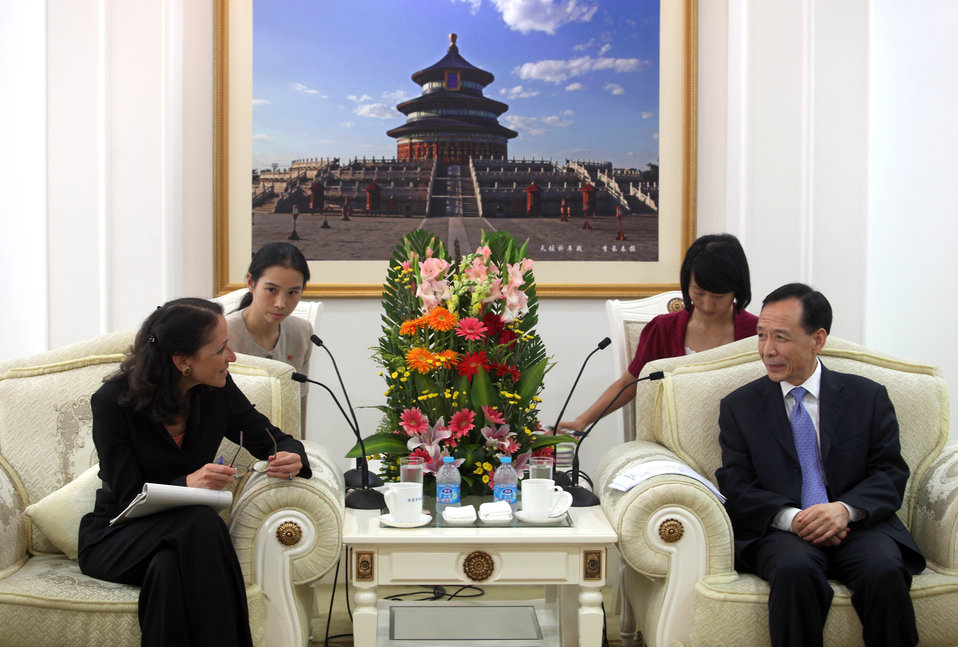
FDA’s China Offices Focus on Product Safety

Ensuring the safety of foreign imports is a top priority for FDA Commissioner Margaret Hamburg. In 2010, she and China’s Vice Minister Pu Changcheng reaffirmed their commitment to product safety. Read this FDA Consumer Update: www.fda.gov/ForConsumers/ConsumerUpdates/ucm284461.htm

Consumer Updates are a quick and easy way to pick up important health information for you and your family. For a complete list of Consumer Updates see the Consumer Updates photo set: www.flickr.com/photos/fdaphotos/sets/72157624900896241/.

For the latest Consumer Updates go to: www.fda.gov/forconsumers/consumerupdates